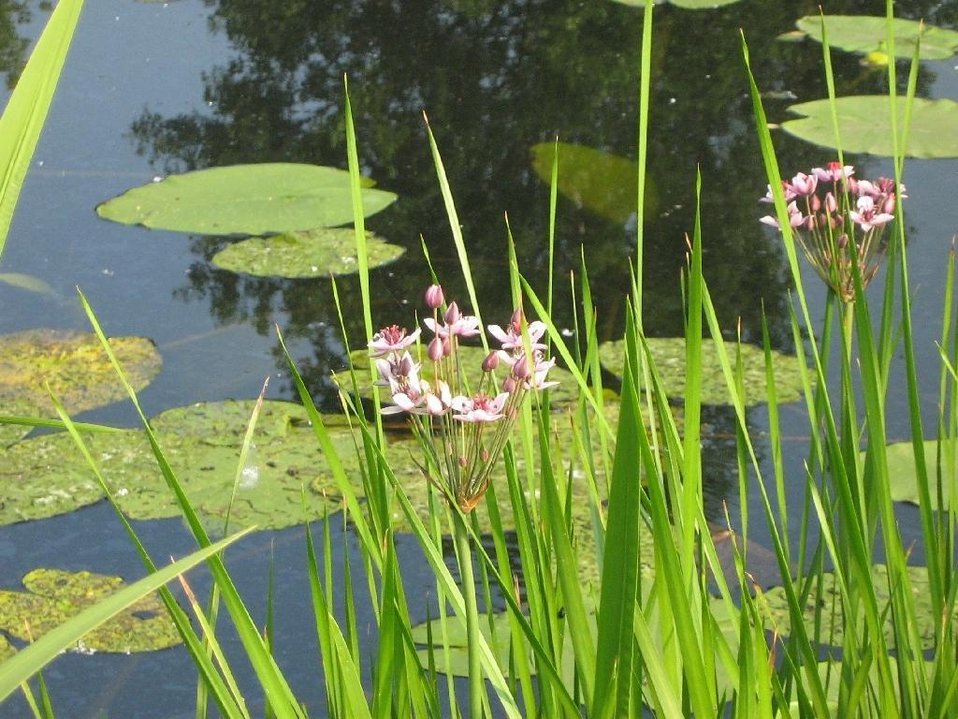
Deutsch: Der Dahme-Umflutkanal, zwischen Leipsch und Köthener See (Landkreis Dahme-Spreewald, Brandenburg).